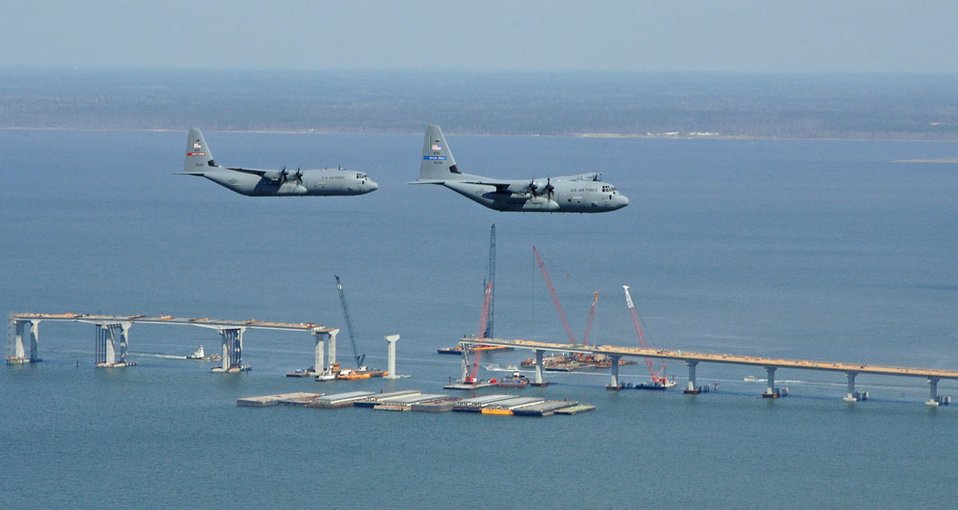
Citizen Airmen return to Keesler, chase Hanna, Ike